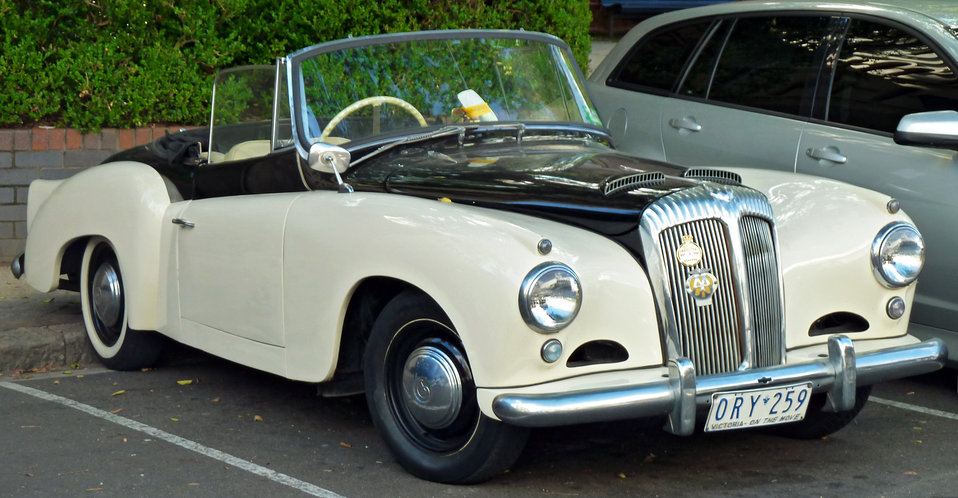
1957 Daimler Conquest (Mark II) Century drophead coupe, photographed at The Rocks, New South Wales, Australia. Note: according to VicRoads, the chassis number for this particular vehicle is 90537, and the engine number is 73961.

Chassis numbers as per The Daimler Tradition by Brian E Smith
Type DJ 254/5 Roadster 90450–90497 90850–90866 Drophead coupé 90500–90553